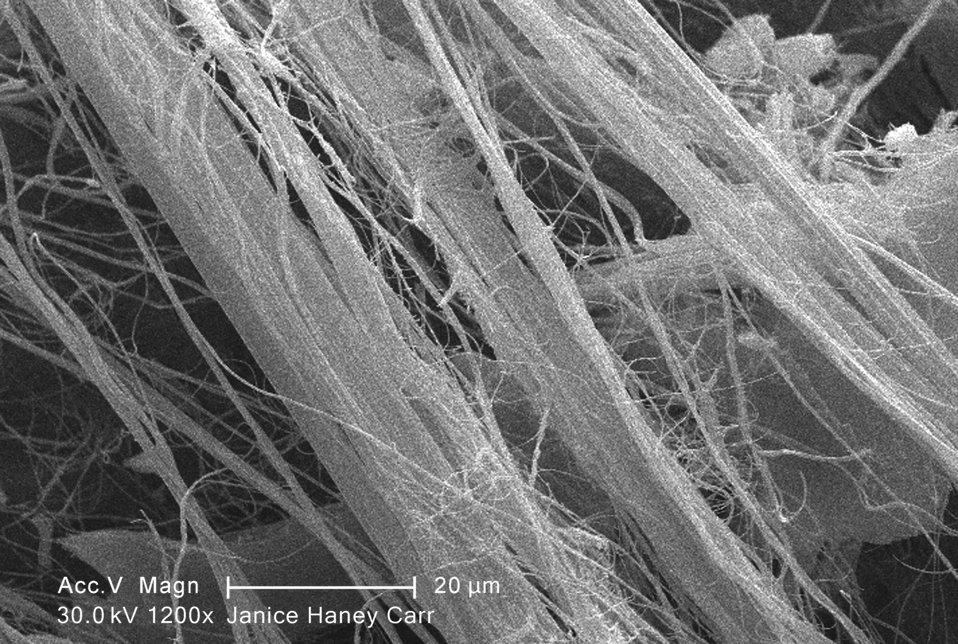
Under a moderate magnification of 1200X, this scanning electron micrograph (SEM) revealed some of the microcrystalline ultrastructure exhibited by a piece of raw chrysotile, or white asbestos, which had been excavated from the Lowell Asbestos Mine on Belvidere Mountain, Vermont.